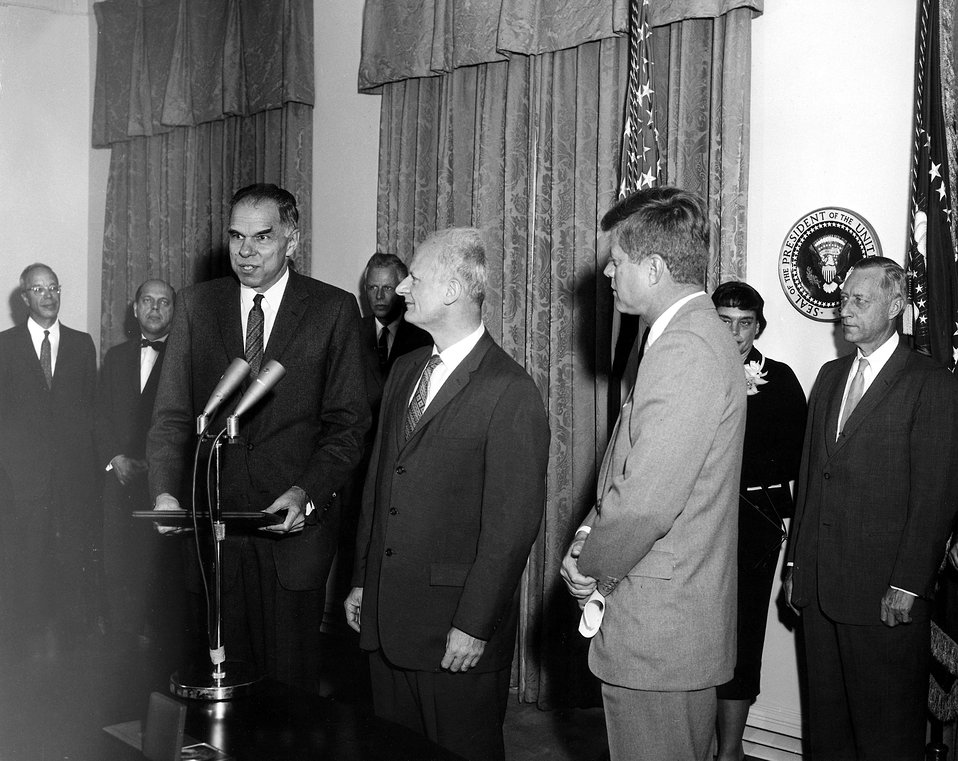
Hans Bethe receiving Fermi Award.